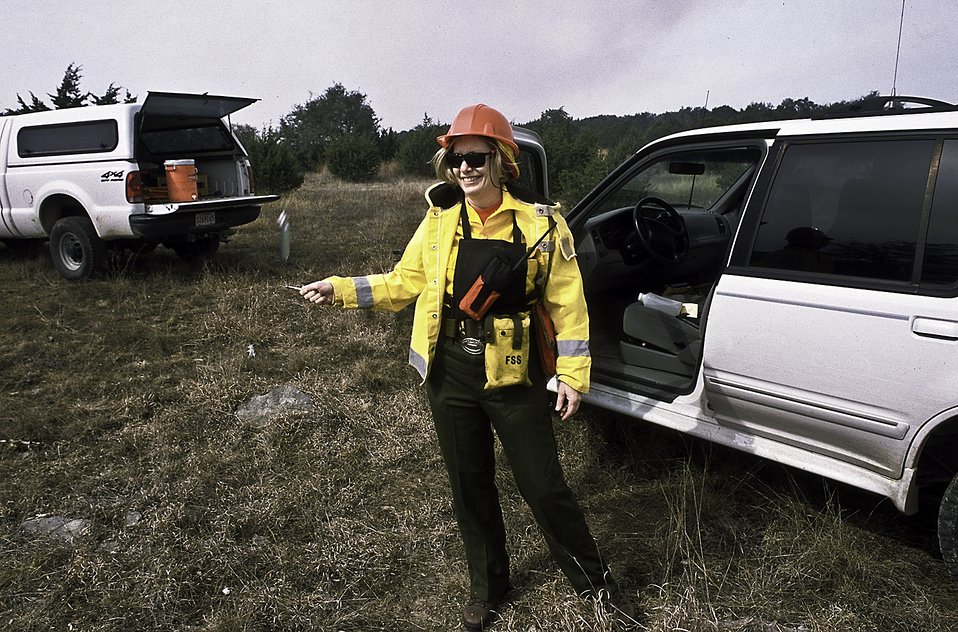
Deborah Holle, manager of Balcones Canyonlands National Wildlife Refuge in Texas, checks weather readings before a prescribed fire. A belt weather kit gives a reading on relative humidity. A sling psychrometer allows her to measures the amount of water vapor in the air.